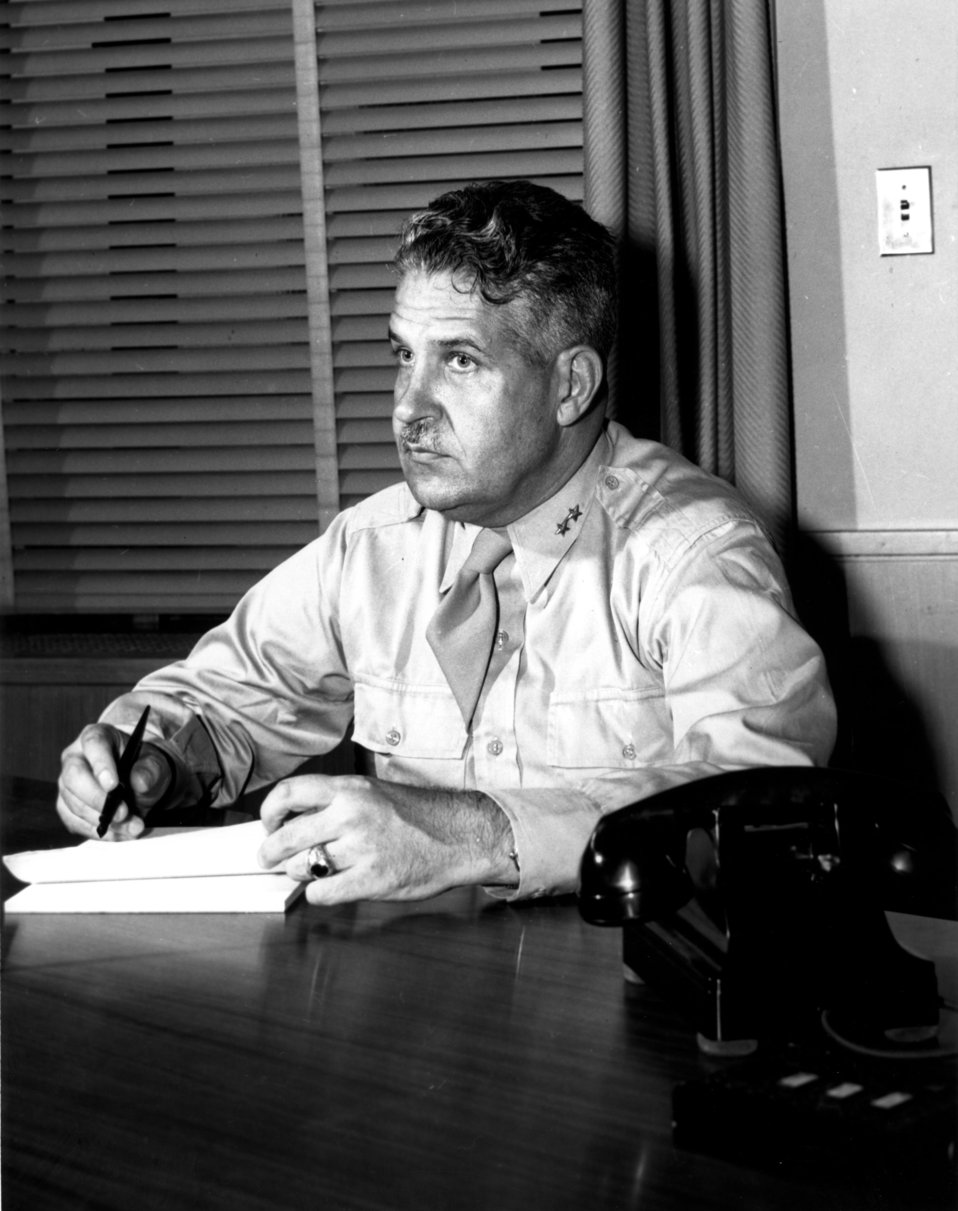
General Groves at Oak Ridge